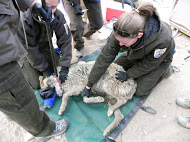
Mexican wolf

Scientific name: Canis lupus baileyi
Status: Proposed Endangered and Proposed Experimental Population, Non-Essential
Photo credit: USFWS
Mexican wolf being checked before release in Arizona Apache Nat'l Forest